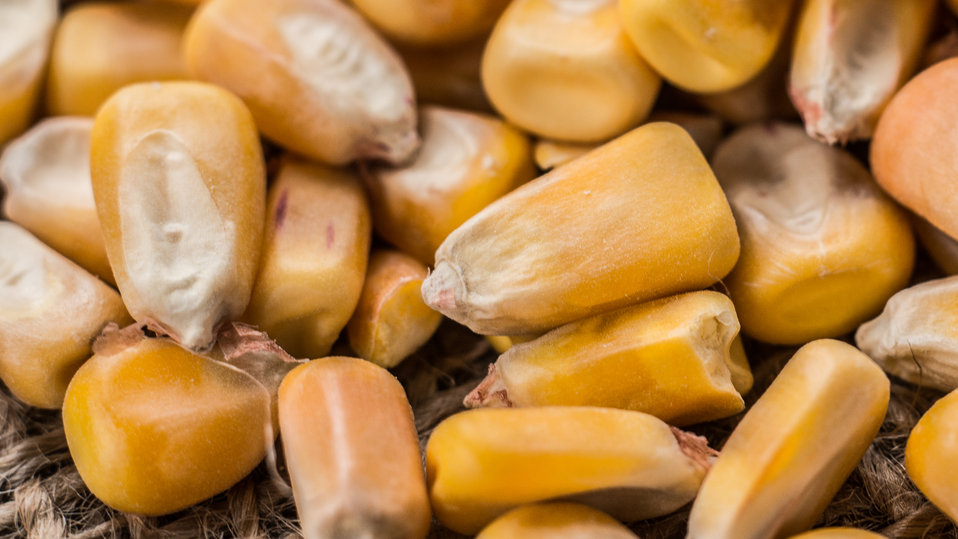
Dry corn at the U.S. Department of Agriculture (USDA) demonstration garden is being ground at the summer farmers market’s final outdoor market of the season at the USDA Whitten Building east parking lot in Washington, DC, on Friday, November 22, 2013.